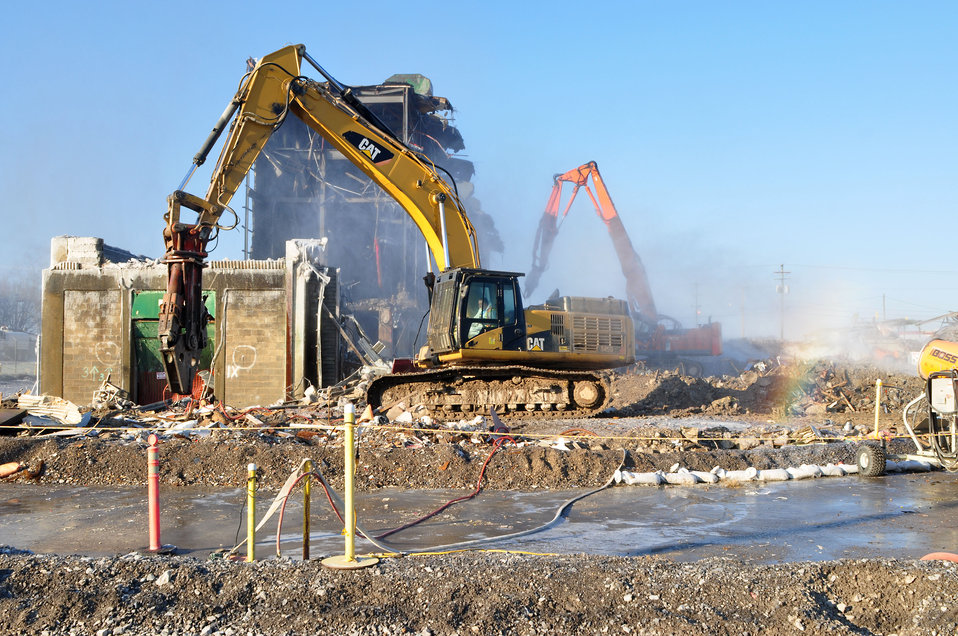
K-25 Demo Oak Ridge 2013

13-152 DOE photo Lynn Freeny 12-12-2013 Oak Ridge Tennessee